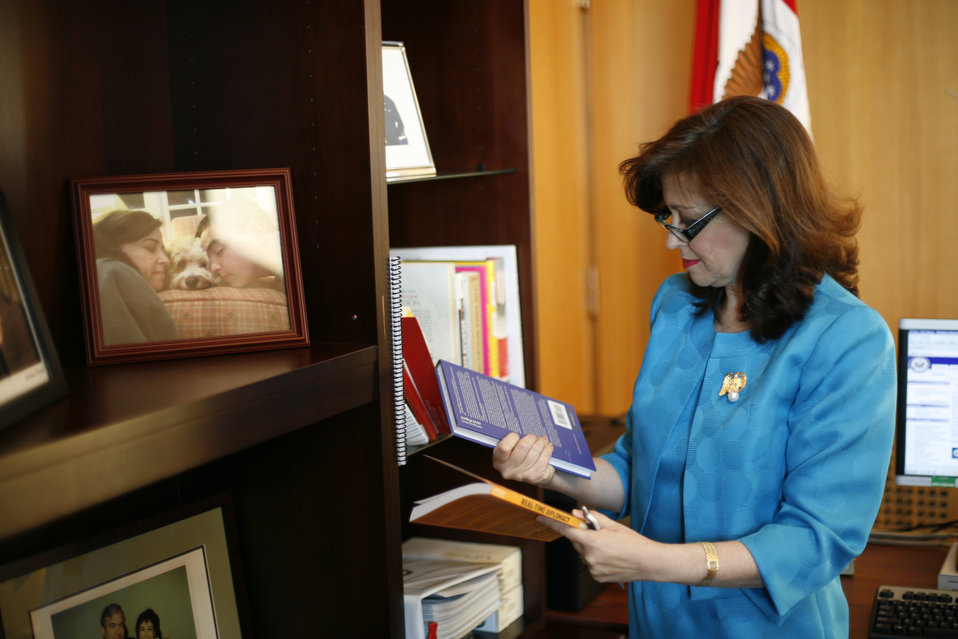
Under Secretary Sonenshine Prepares for her Swearing-In Ceremony

Under Secretary of State for Public Diplomacy and Public Affairs Tara Sonenshine prepares for her swearing-in ceremony with Secretary of State Hillary Rodham Clinton at the U.S. Department of State in Washington, D.C., on April 24, 2012.